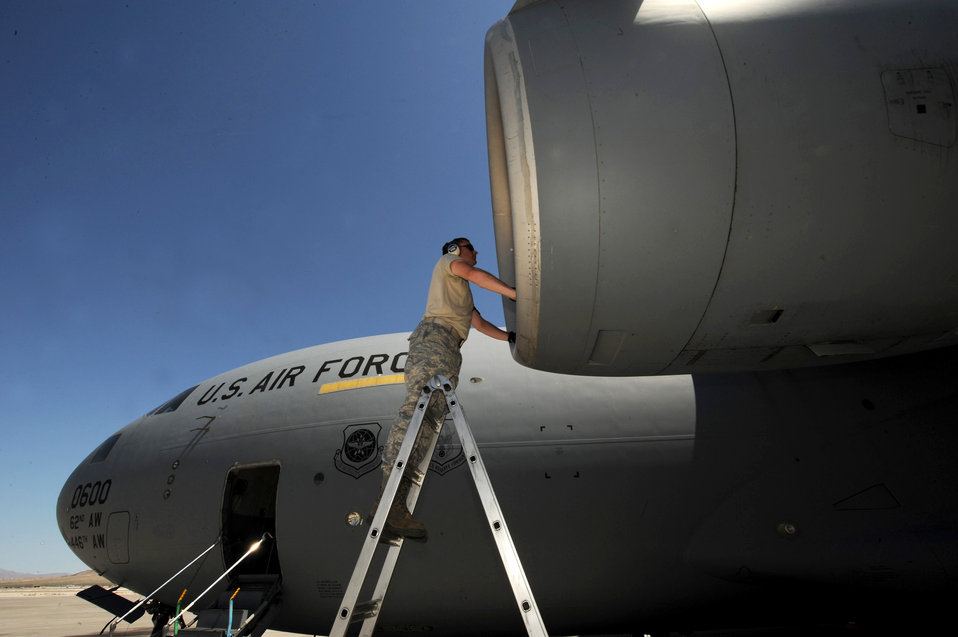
It's no small task

Tech. Sgt. Patrick Remfrey checks the intake on a C-17 Globemaster III May 19, 2010, during a mobility exercise at Nellis Air Force Base, Nev. Sergeant Remfrey is crew chief assigned to the 62nd Aircraft Maintenance Squadron at Joint Base Lewis-McChord, Wash.